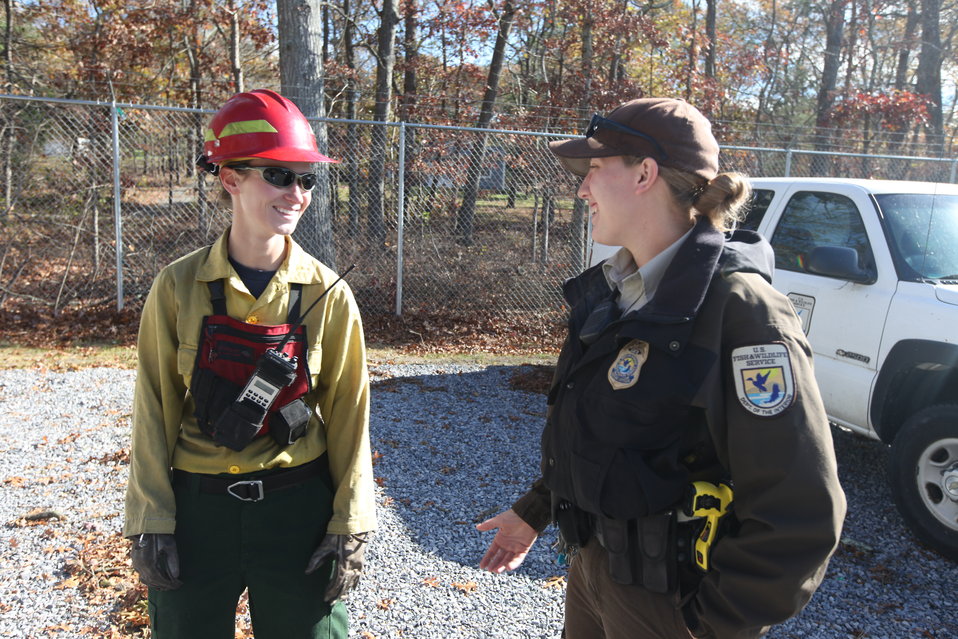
Coordination of clean up efforts (NY)

U.S. Fish and Wildlife Service trail crew leader and Law Enforcement coordinate cleanup efforts at the Long Island National Wildlife Refuge Visitors Center in the aftermath of storm Sandy.